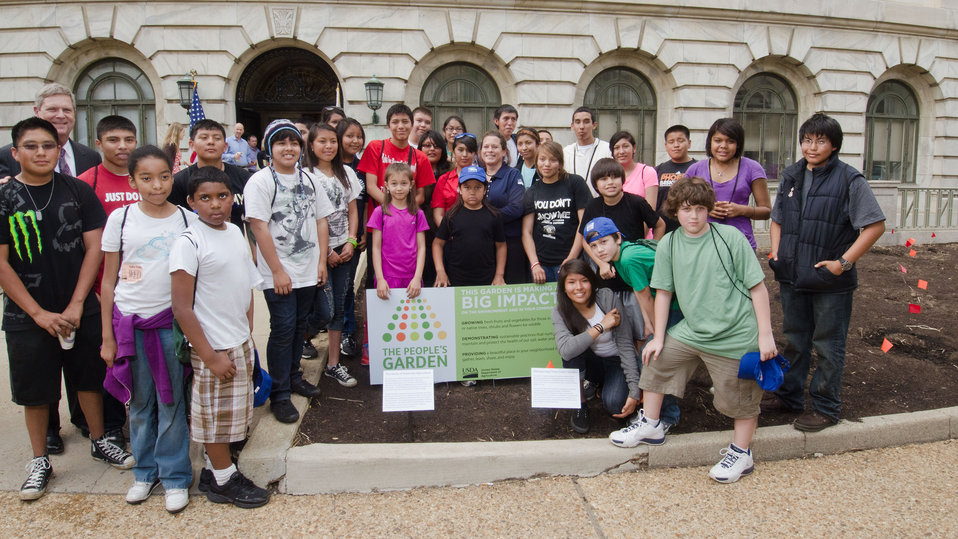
Agriculture Secretary Tom Vilsack (left rear of group) met with more than 30 Students from Eastern and Western Tribes, Southeast Alaska, and Tuba City, Arizona who came to the Nation’s Capitol to plant vegetable seeds that are indigenous to North America. The garden is called The Roots of American Agriculture, and is part of the Headquarters’ People’s Garden. The event took place on Wednesday, April 27, 2011 at the U.S. Department of Agriculture in Washington, DC.